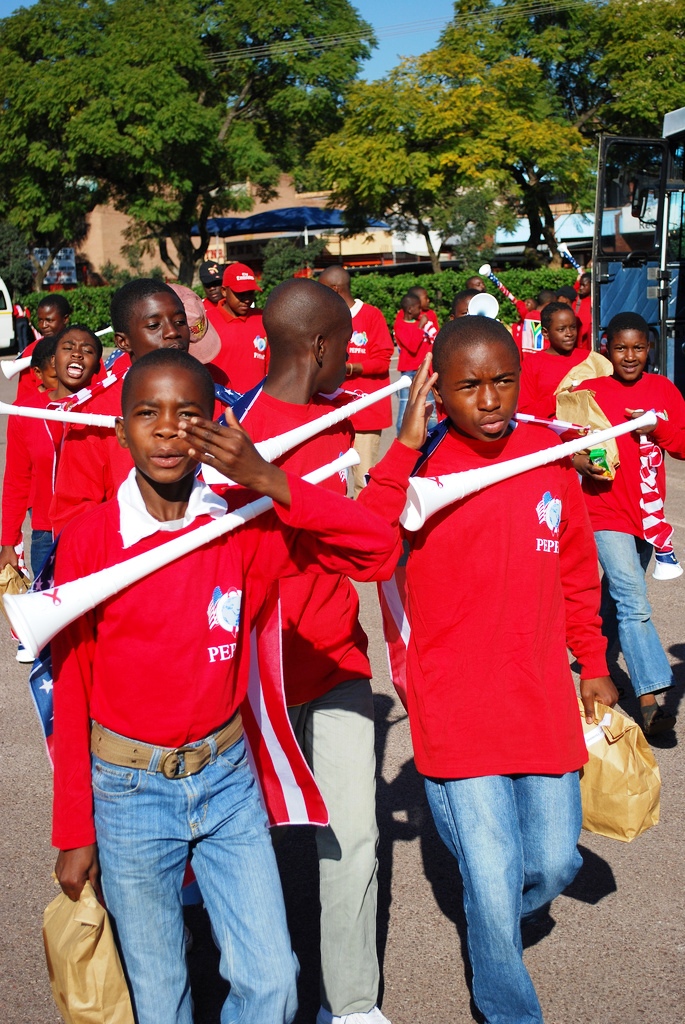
South African Students Participate in U.S. National Socer Team's Open Practice Session

South African students attend the U.S. National Soccer Team's open practice session at the Pliditch Stadium in Pretoria, South Africa, on June 6, 2010. The U.S. National Soccer Team is preparing for the 2010 World Cup in South Africa.